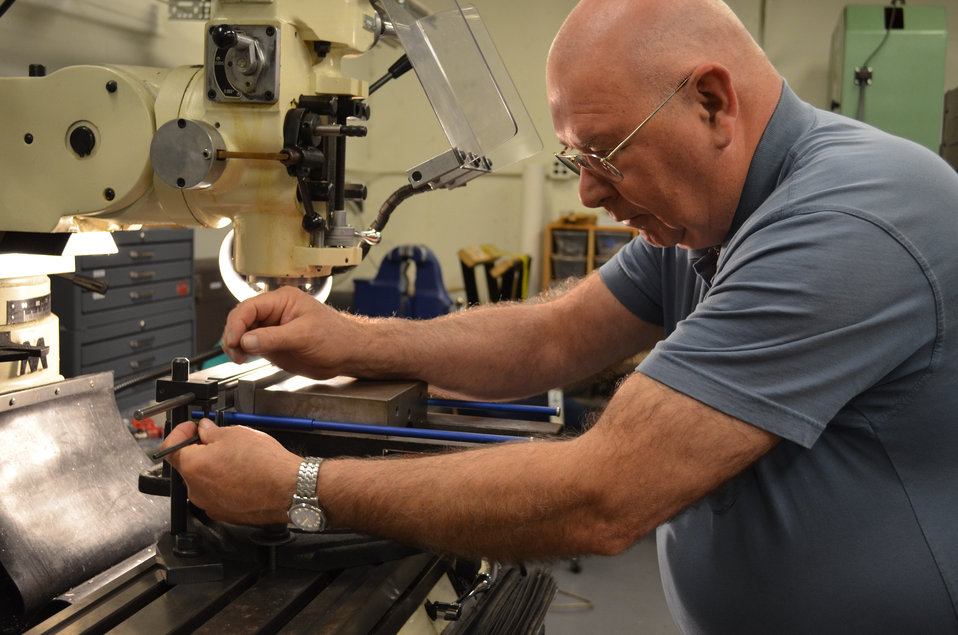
Photographed at a milling machine in his engineering suite, Engineering Technician, Mr. Jerry Kratzer, a member of the Engineering & Physical Hazards Branch of the Division of Applied Research and Technology (DART), was in the process of fabricating a microphone mounting device at the request of the Hearing Protection Group.'We help save hearing, protect people, and support the mission of public health by providing better protection for the American worker by designing and fabricating devices that are not available on the commercial market', says engineer Kratzer.